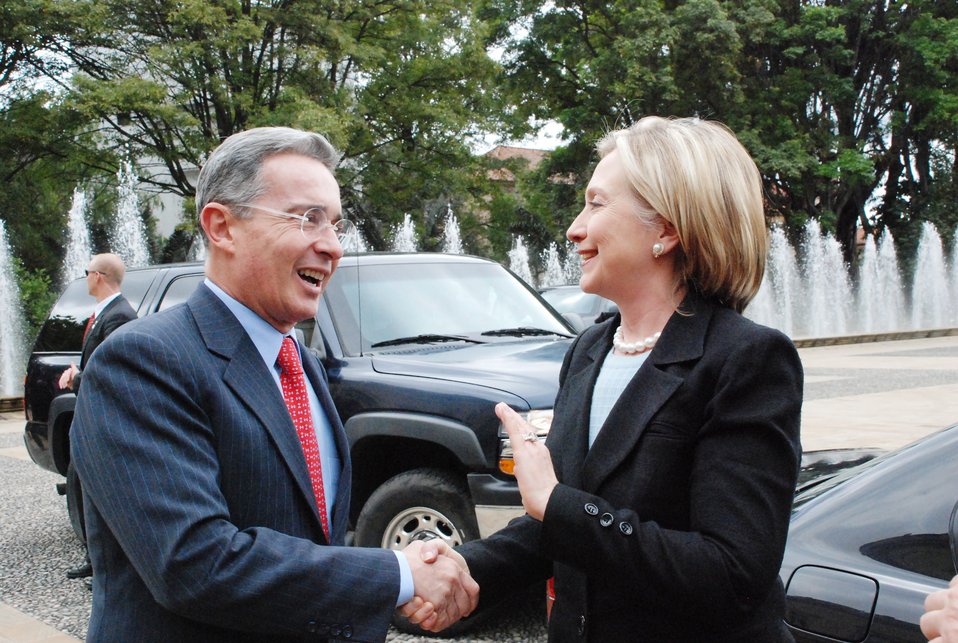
Secretary Clinton Shakes Hands With Colombian President Uribe

U.S. Secretary of State Hillary Rodham Clinton shakes hands with Colombian President Uribe at the Plaza de Armas in Casa de Nariño in Bogotá, Colombia, on June 9, 2010.